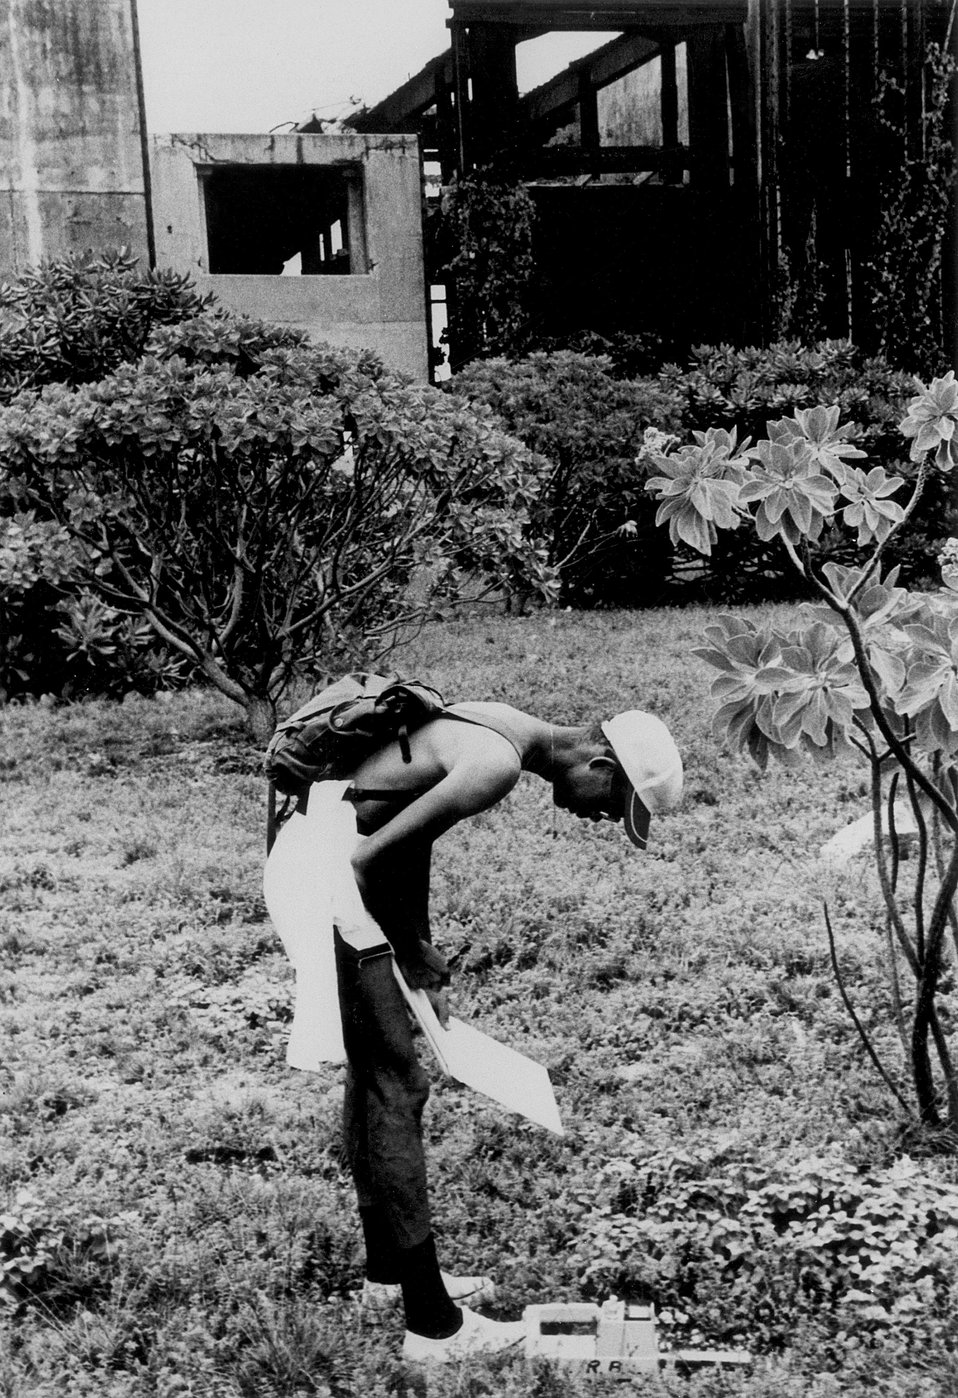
Scientists check the condition of Bikini after nuclear tests.